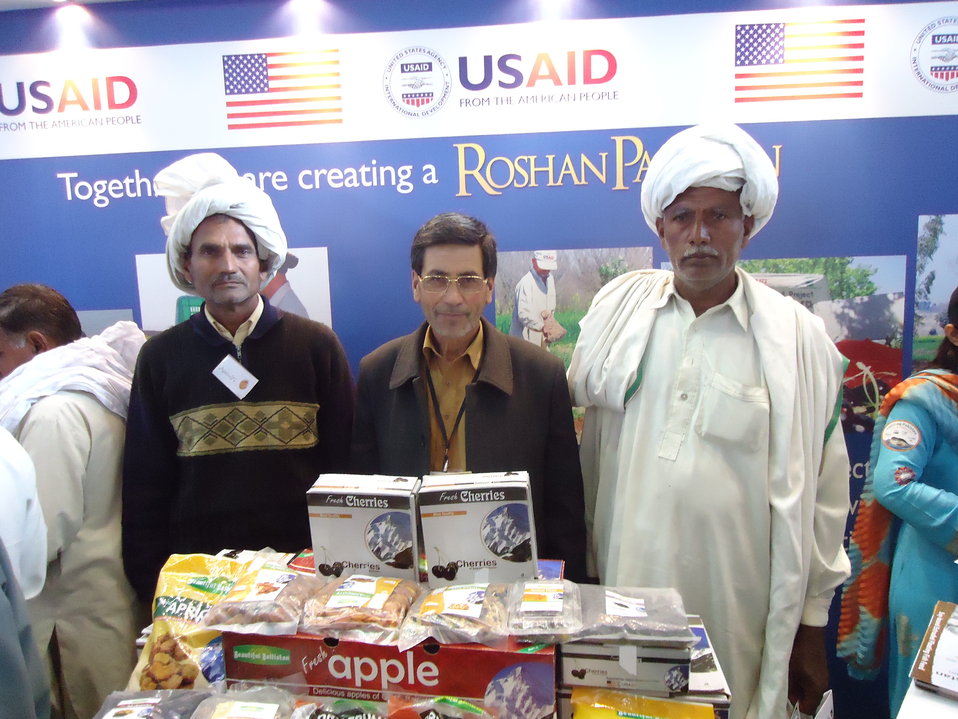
Sadpara Development Project

Farmers at SDP USAID Stall